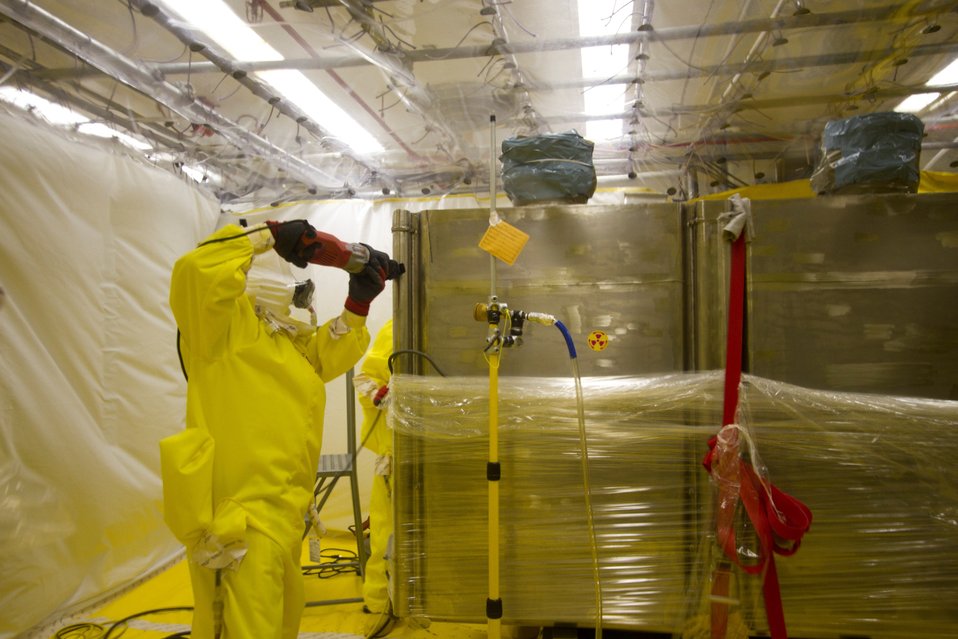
Hanford Site Recovery Act Workers Maintain Momentum to Prepare Plant for Demolition

A worker cuts a glove box in Hanford’s Plutonium Finishing Plant.